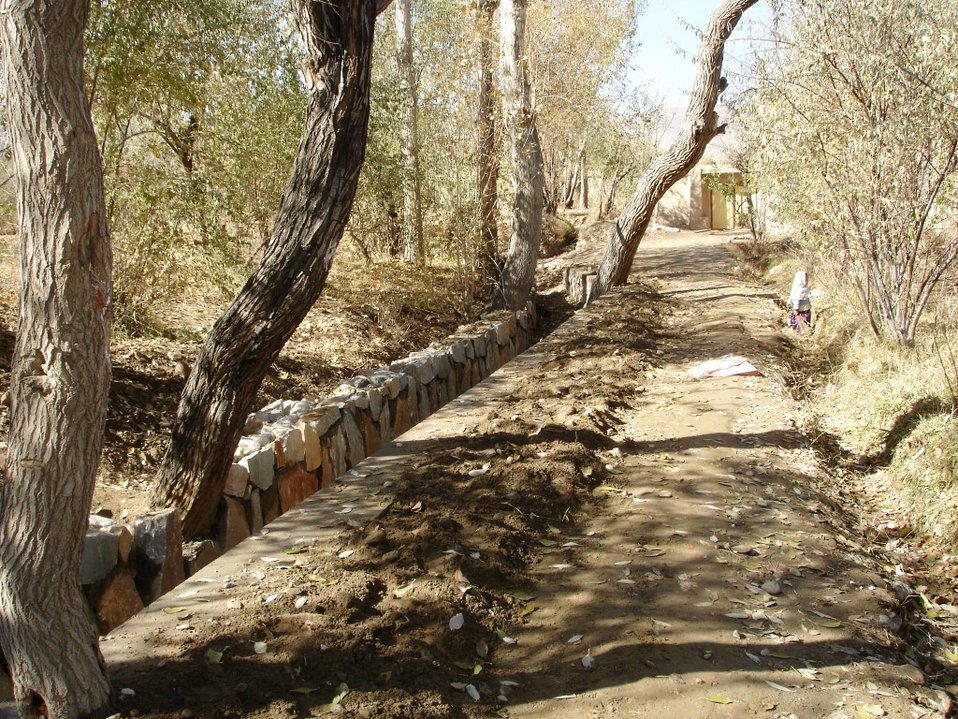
Maydan Wardak Province, Saydabad District

A newly constructed canal and siphon system improves the water supply in the Tara Kheil village of Saydabad District, regulating excess water from flooding and providing equitable irrigation to the 200 families in the area. The Tara Kheil CDC applied and obtained a $40,000 worth grant and engineering support from USAID/SIKA-East to achieve this.